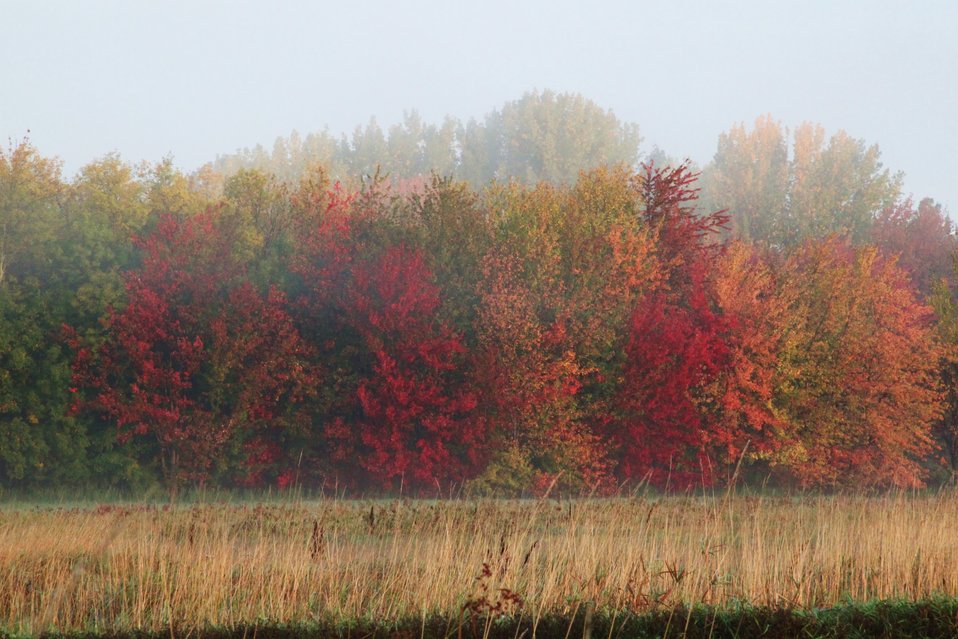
Missisquoi National Wildlife Refuge fall foliage

Fall foliage near refuge office - Missisquoi National Wildlife Refuge.